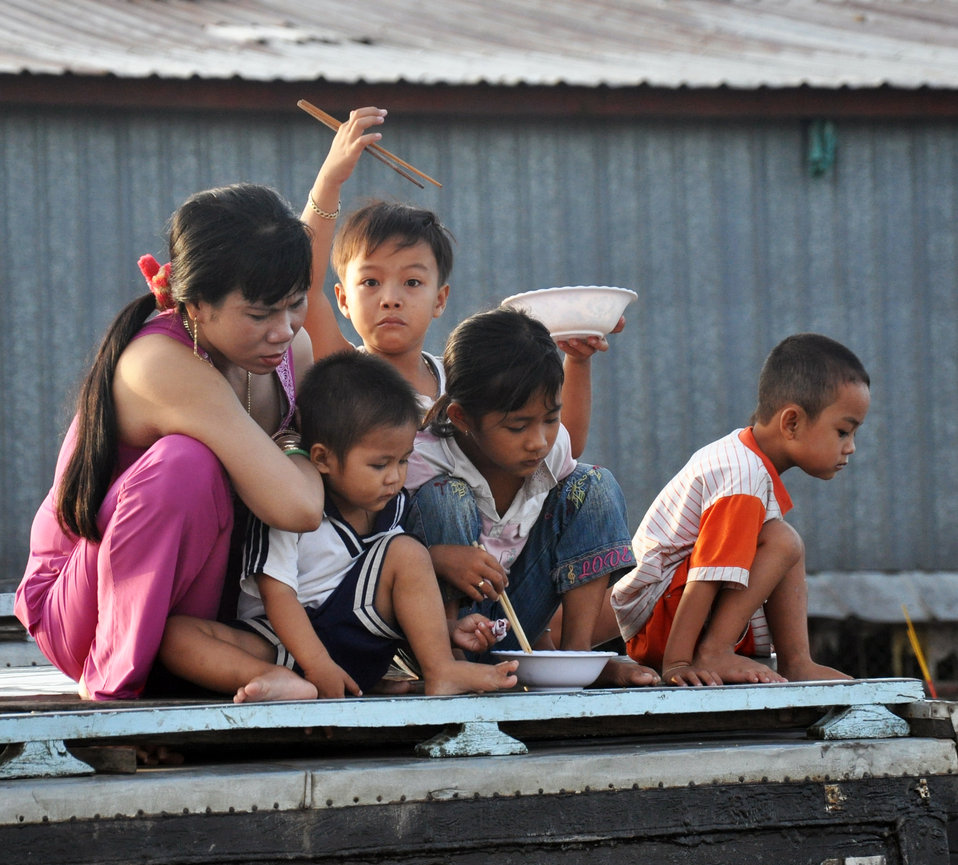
Breakfast on the Can Tho Floating Market